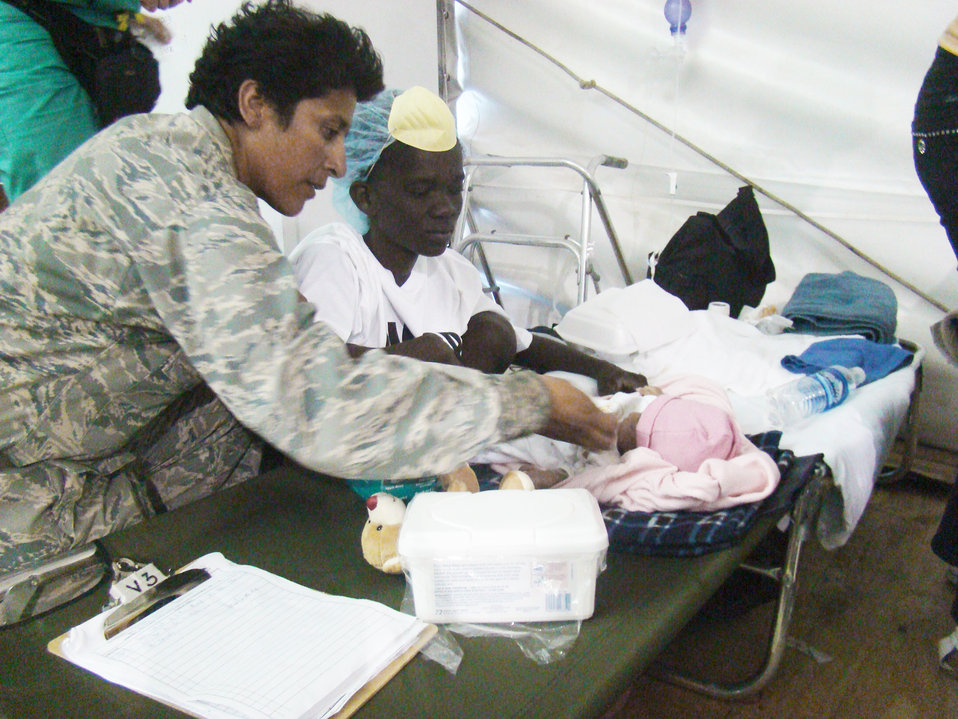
God pushed me

Chaplain (Capt.) Eusebia Rios blesses one of three triplets in the children's ward of a hospital compound adjacent to the Toussaint L'Ouverture International Airport in Port-au-Prince, Haiti, Jan. 29, 2010. The babies were born in the wake of the 7.1 magnitude earthquake which devastated the capital city Jan.12. Chaplain Rios, deployed from the 27th Special Operations Wing at Cannon Air Force Base, N.M., serves as the only chaplain to more than 1,500 military men and women encamped at the airport as part of Operation Unified Response. Known as the